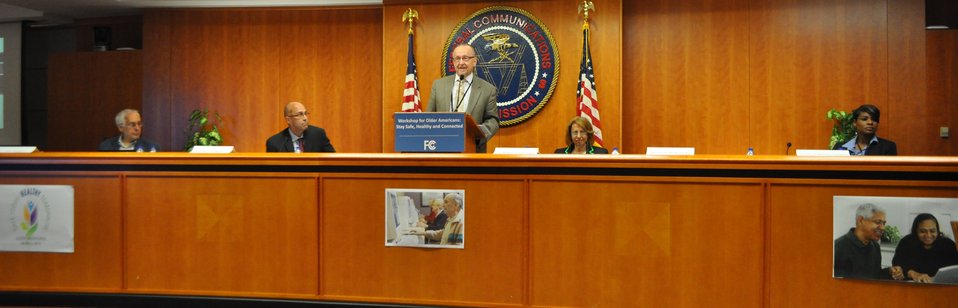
5.22.2014 Workshop for Older Americans: Stay Safe, Healthy and Connected

Older Americans Workshop Agenda Stay Safe, Stay Healthy, Stay Connected